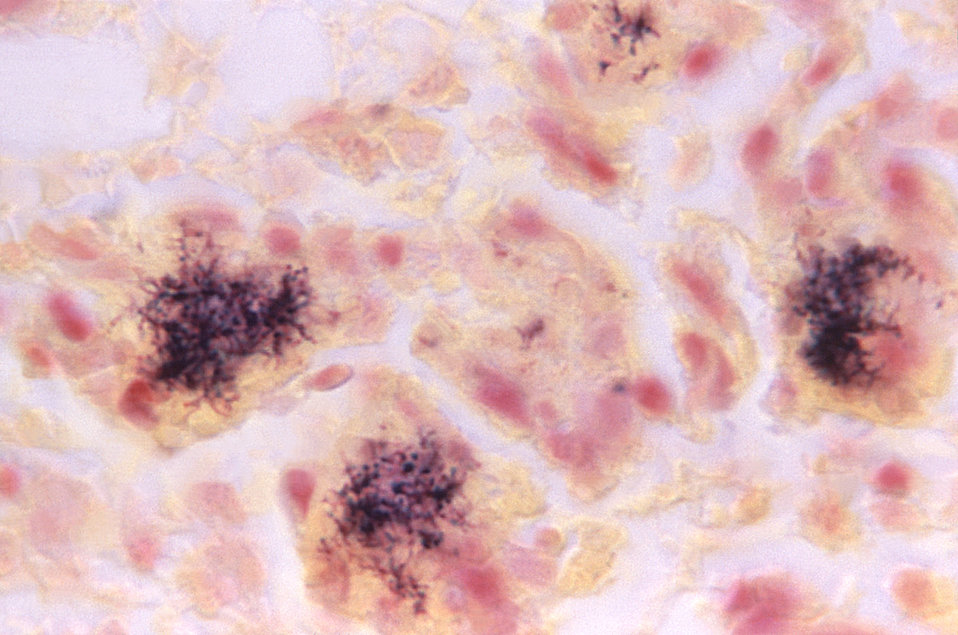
Magnified 1125X, this Brown and Brenn-stained photomicrograph revealed some of the ultrastructural details associated with a specimen of thawed pus extracted from the jaw bone of a wild Dall sheep, Ovis dalli with a suspected case of actinomycosis. See PHIL 10804 for a gross pathologic view of the mandible from which this specimen was derived.